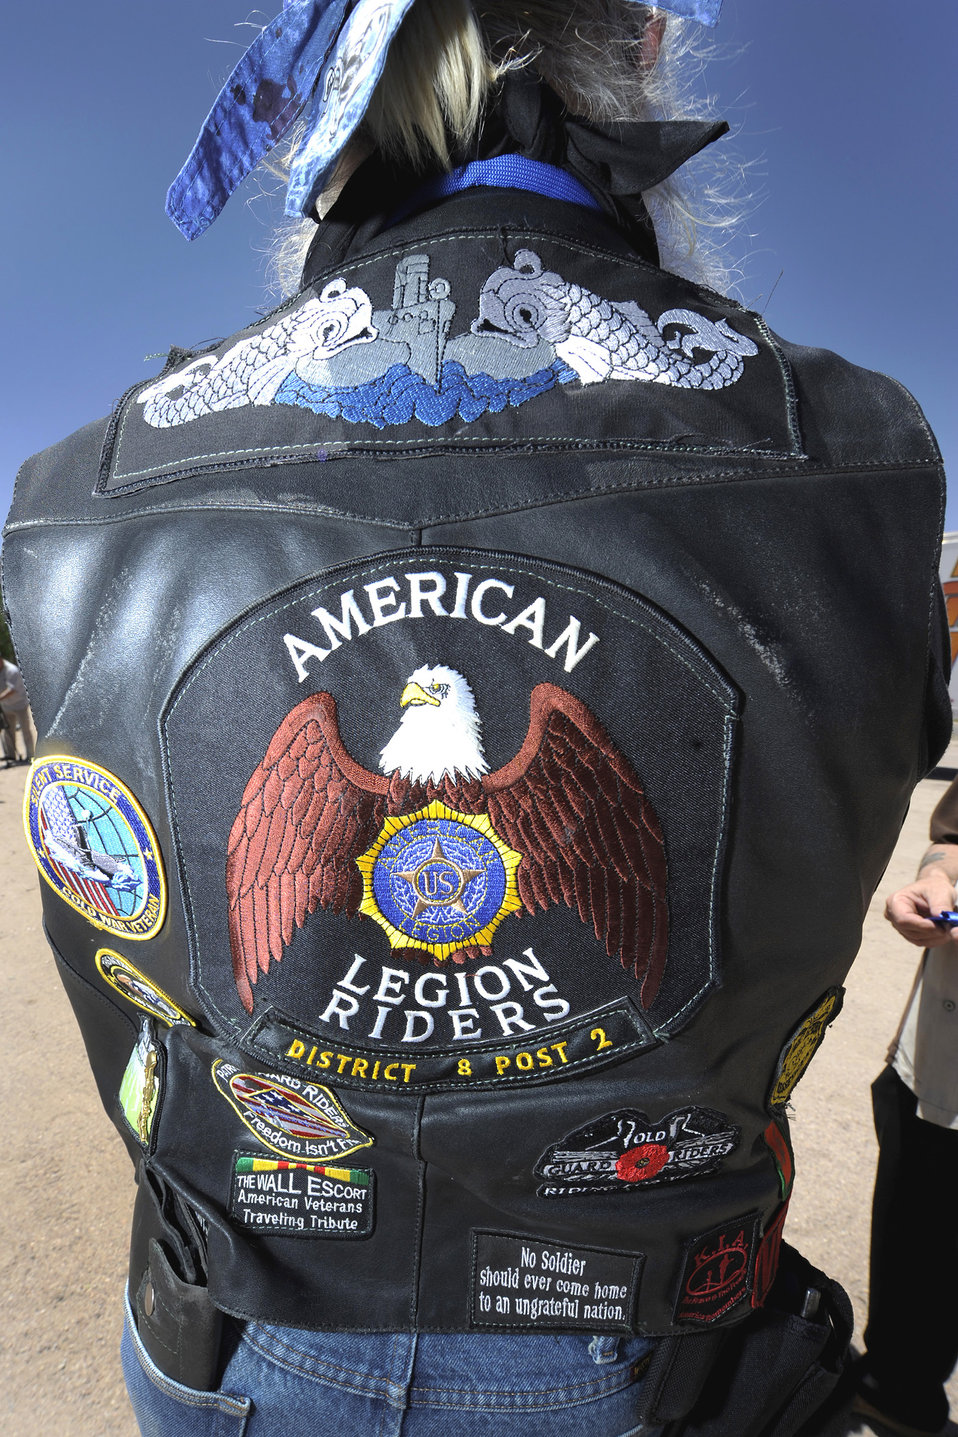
Traveling Vietnam Wall

Patriot Guard Rider,